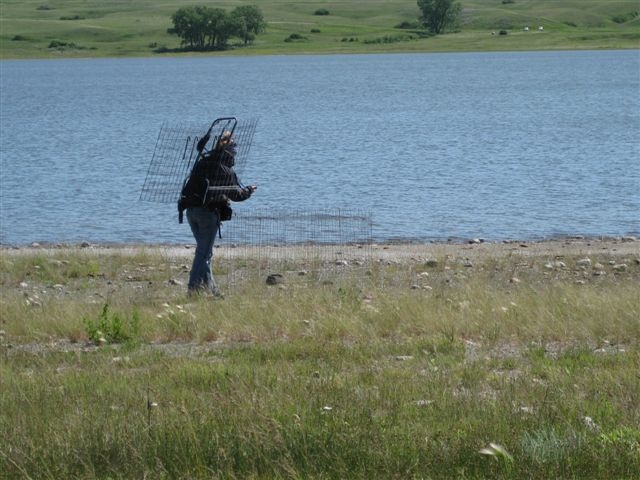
Constructing Piping Plover Exclosure Cages

To improve the likelihood of eggs hatching, nests are caged to keep out predators. The number of chicks that survive to fledging and piping plovers returning to breed on the alkali lakes in North Dakota and Montana has increased since the project began in1990.